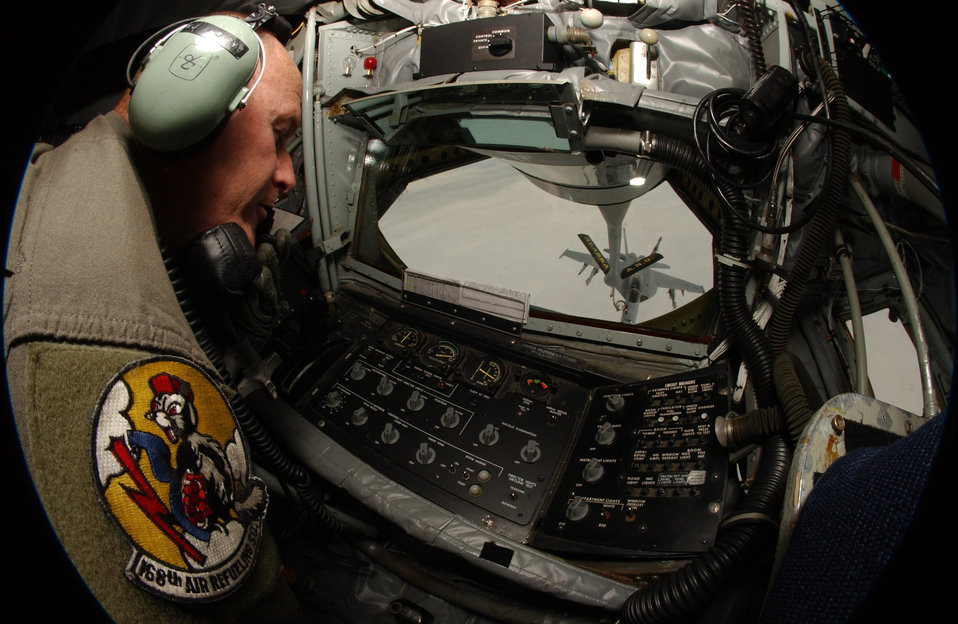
Cooperative Cope Thunder 2004-01

OVER ALASKA (AFPN) -- Boom operator Master Sgt. Keith Henrys watches as a Navy F/A-18F Super Hornet approaches a KC-135R Stratotanker drogue for refueling July 21 during an exercise Cooperative Cope Thunder 2004-01 mission. Sergeant Henrys and the tanker are assigned to the Alaska Air National Guard's 168th Air Refueling Squadron at Eielson Air Force Base, Alaska. Aircraft and crews from Naval Air Station Lemoore, Calif., are taking part in the exercise.